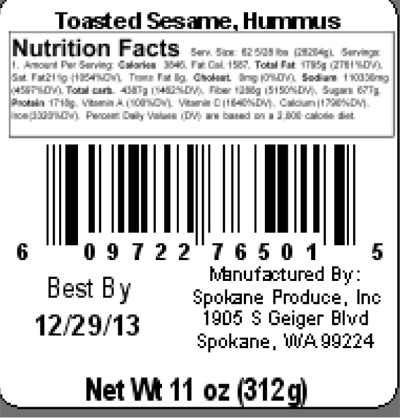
RECALLED – Toasted Sesame Hummus

December 20, 2013 – Product Recall – Spokane Produce, Inc. Voluntarily Recalls Victor™ Toasted Sesame Hummus Because Of Possible Health Risk.